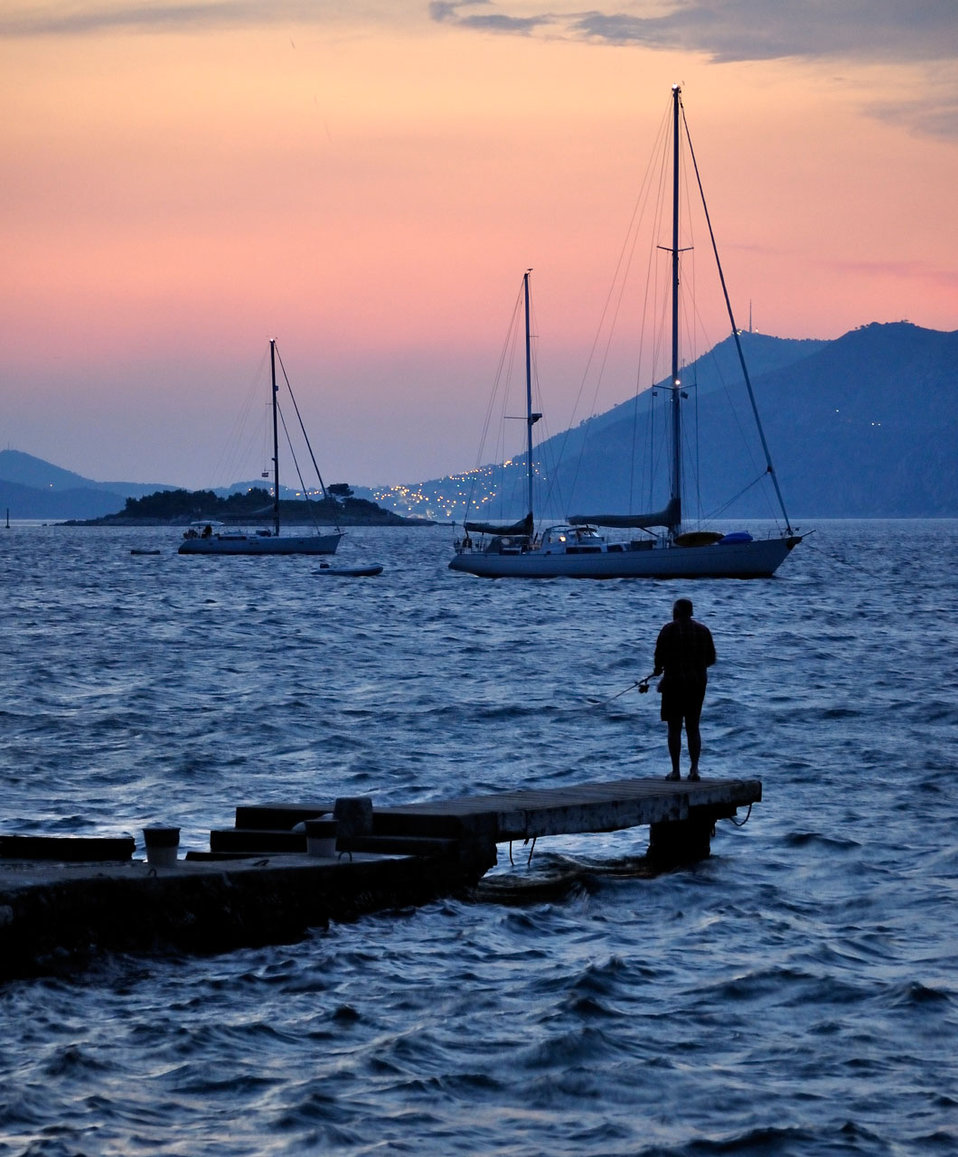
Evening fishing

Just after sunset at the adriatic.